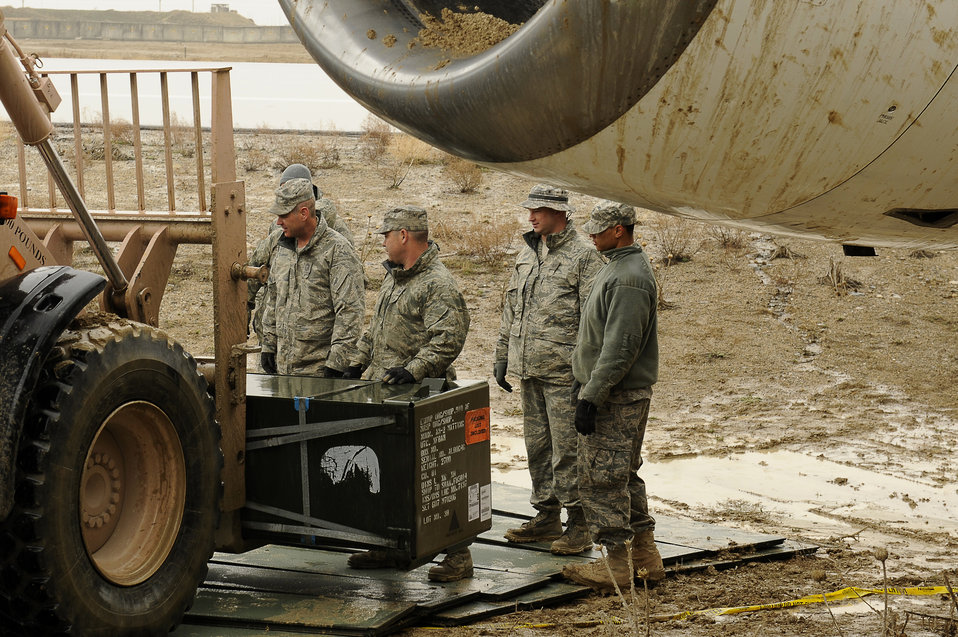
Bagram Airmen respond to emergency aircraft landing

Airmen lay down matting so they can move an Airbus A300 after its crew preformed an emergency landing March 3, 2010,at Bagram Airfield.